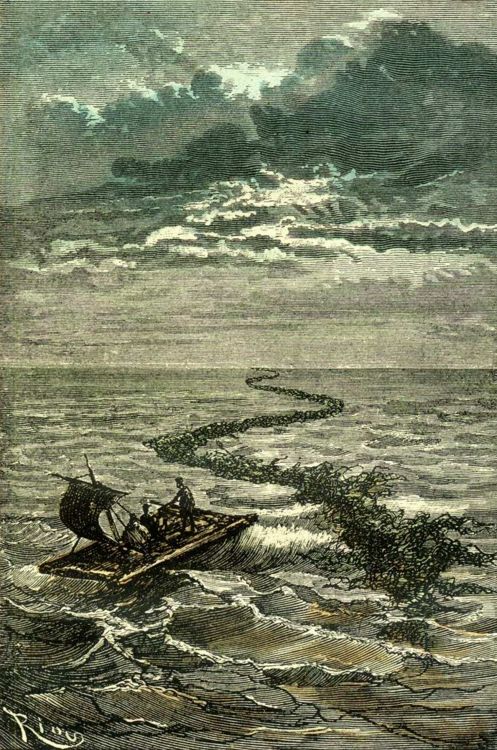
An ilustration from the novel 'Journey to the Center of the Earth' by Jules Verne painted by √âdouard Riou. Polski: Ilustracja powie≈õci Juliusza Verne'a 'Wyprawa do wnƒôtrza Ziemi' autorstwa √âdouarda Riou. Fran√ßais†: 'Voyage au centre de la Terre', √âdouard Riou. Fran√ßais†: Des algues immenses vinrent onduler √† la surface des flots.